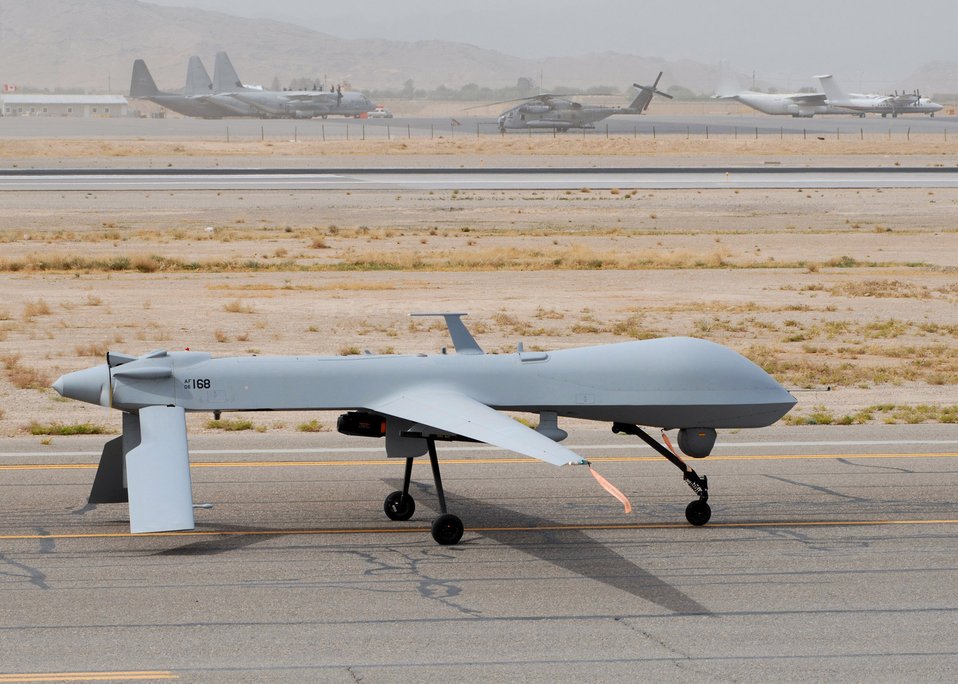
Predators of the mountains

An MQ-1 Predator returns to Bagram Air Base, Afghanistan, from an Operation Enduring Freedom mission. The Predator is an unmanned aerial vehicle primarily used for armed interdiction, as well as intelligence, surveillance and reconnaissance.